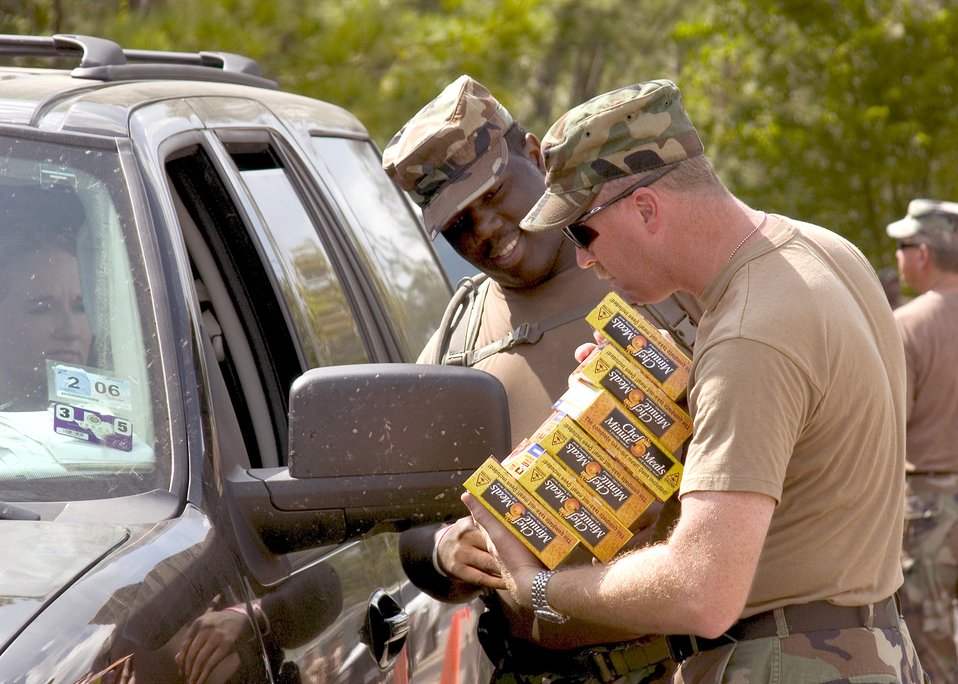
Help moves to rural areas

CLEVELAND, Texas -- Army Spc. Michael Henderson (left) and Army Sgt. Michael McNutt distribute food to residents here. Two hundred fifty Texas National Guardsmen with Task Force-Seguin are staging out of a local high school to assist the community after Hurricane Rita devastated the area. As power comes up, food distribution is moving to more rural areas in surrounding counties.